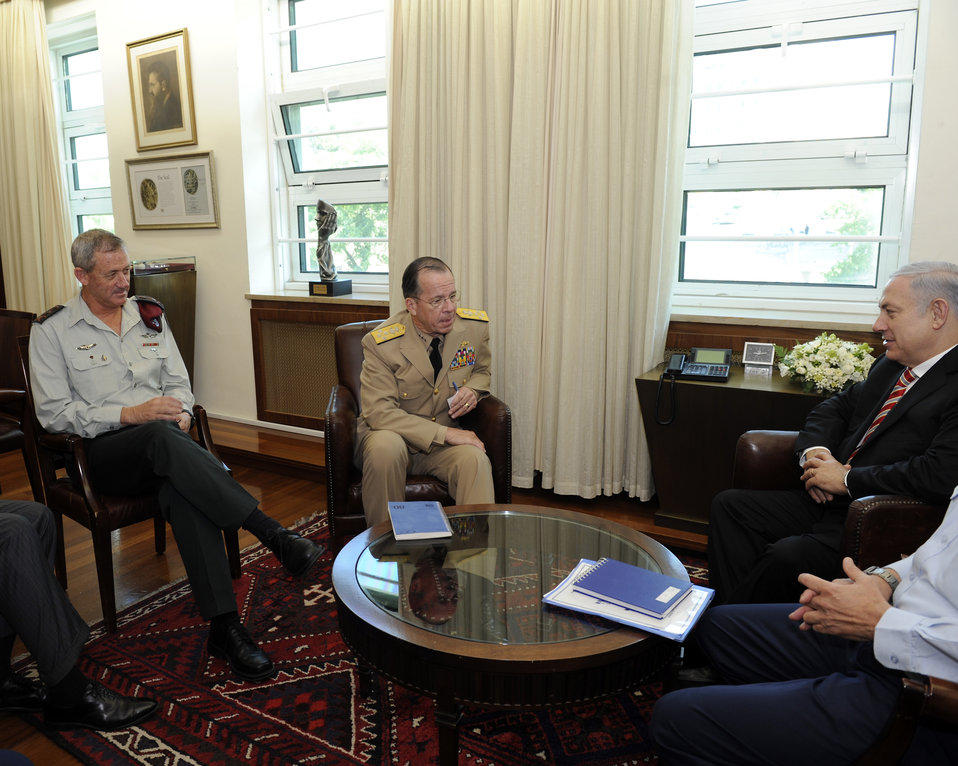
Admiral Mullen Meets With Israeli Prime Minister Netanyahu

Admiral Michael Mullen, Chairman of the Joint Chiefs of Staff of the U.S. Military, meets with Israeli Prime Minister Benjamin 'Bibi' Netanyahu, in Jerusalem on July 19.